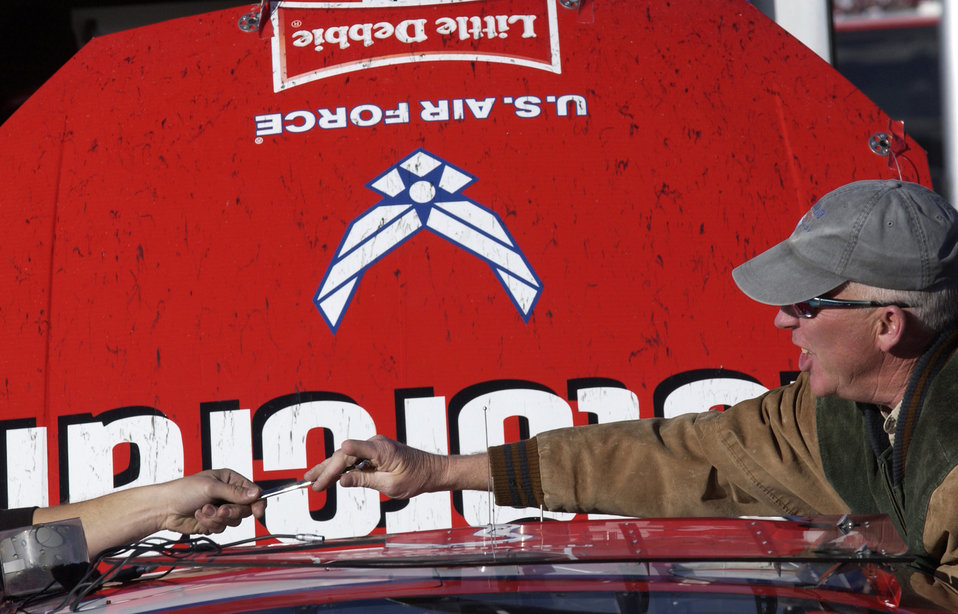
NASCAR flies

Mechanics make adjustments during NASCAR UAW-DaimlerChrysler 400 at the Las Vegas Motor Speedway, Las Vegas, Nev., March 12, 2006. Ken Schrader the driver; day ended with engine problems on lap 187 and finished in 41st place.